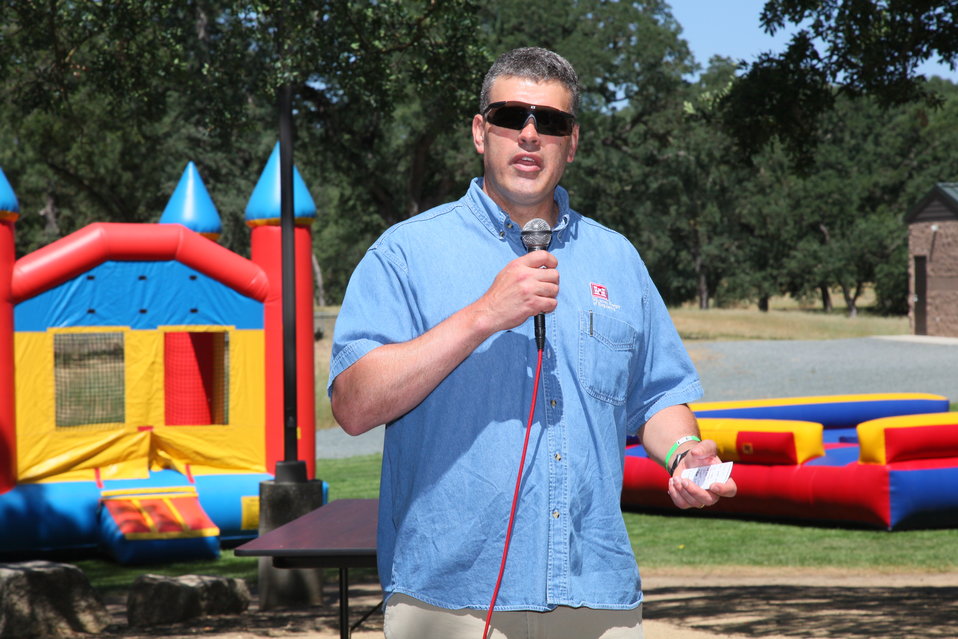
2011 Annual Picnic